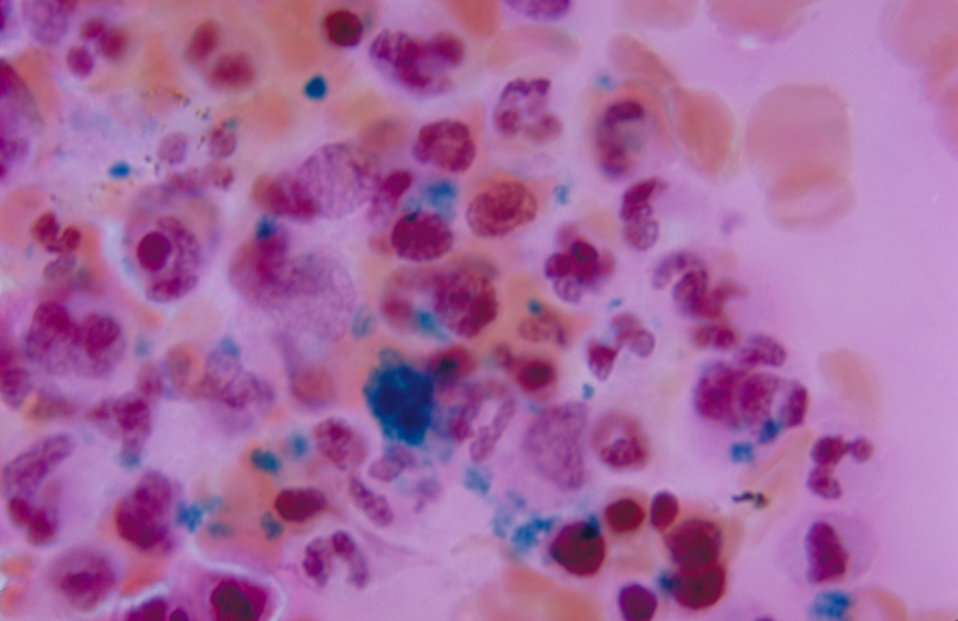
This was a bone marrow smear photomicrograph revealing normal iron stores using Prussian blue stain.